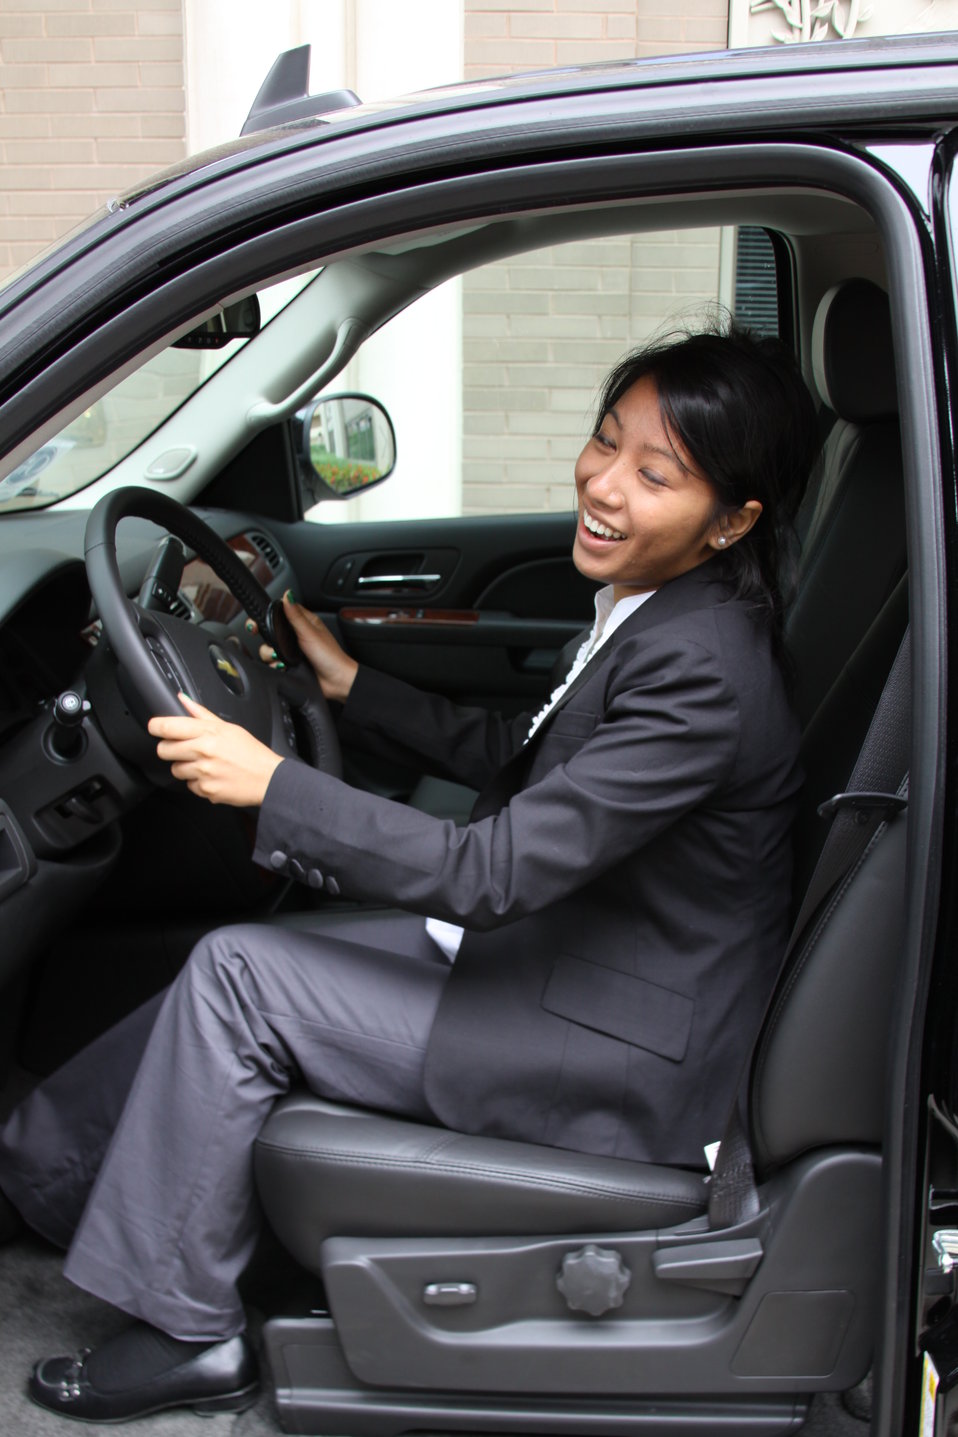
Tahoes 018